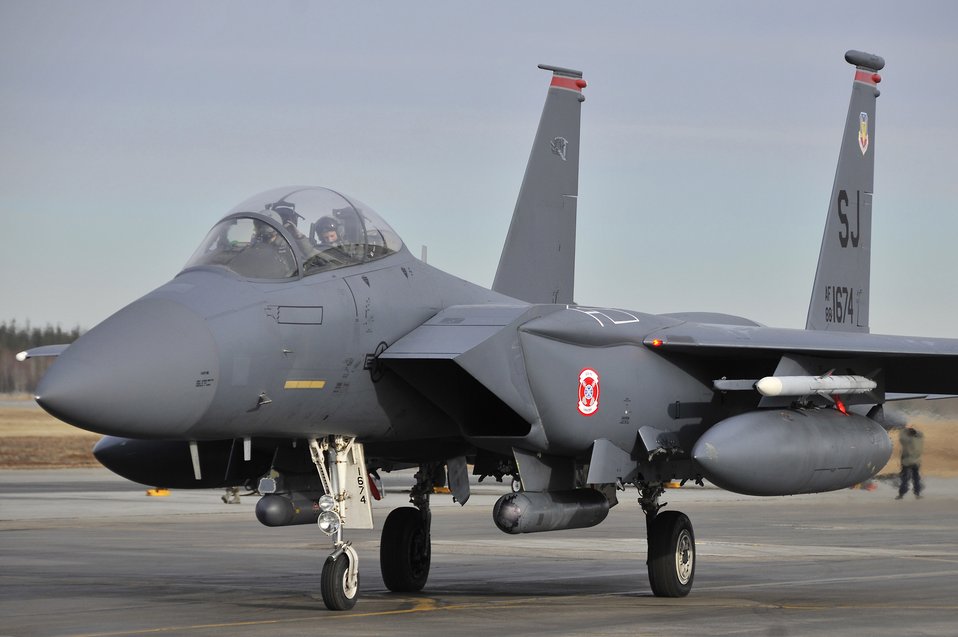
Red Flag-Alaska takes off

An F-15E Strike Eagle taxis to the runway during Red Flag-Alaska 10-2, April 19, 2010, at Eielson Air Force Base, Alaska. The exercise is a Pacific Air Forces-directed field training exercise for United States and coalition forces under simulated combat conditions. The Strike Eagles are assigned to Seymour Johnson AFB, N.C.